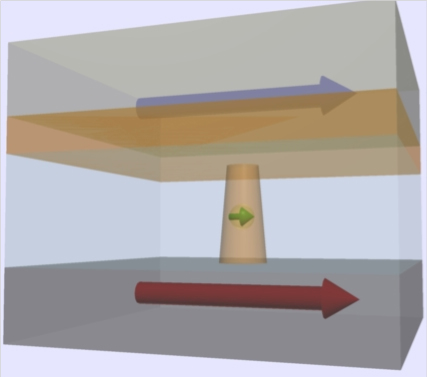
Layered Switching Devices

When two electrodes (top and bottom layers) whose magnetic orientation is the same (indicated by arrows) are separated by thin layers of copper (orange) and tantalum oxide (blue), a filament of copper forms through the oxide when there is a potential difference of 1 to 1.5 volts across the electrodes. When the filament forms, current can flow easily between the two electrodes. The findings help solve the mystery of why the layered structure can form electronic switches that maintain their on/off state when the power is off.